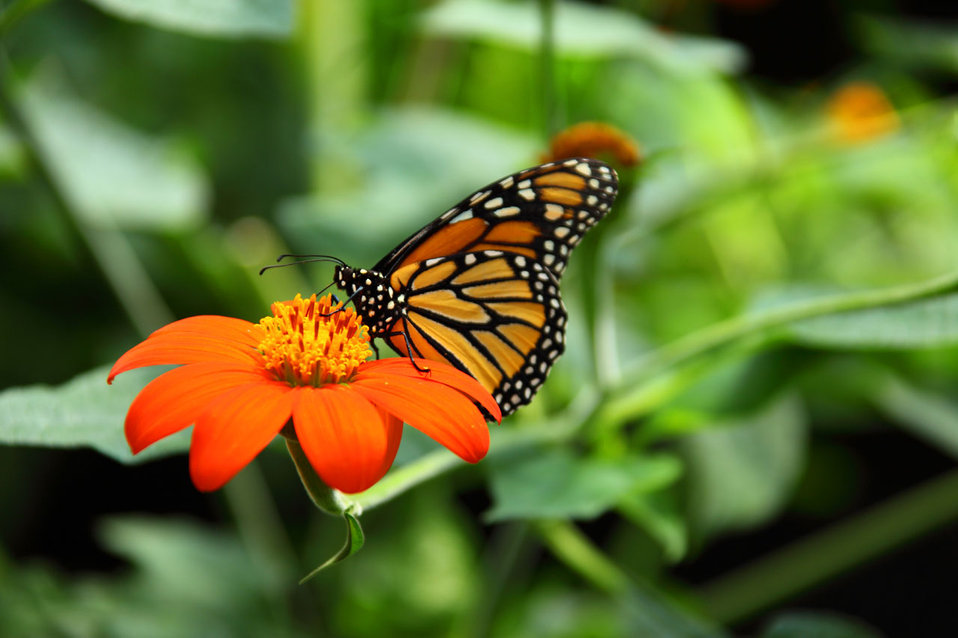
Monarch butterfly feeding on nectar on mexican sunflower.